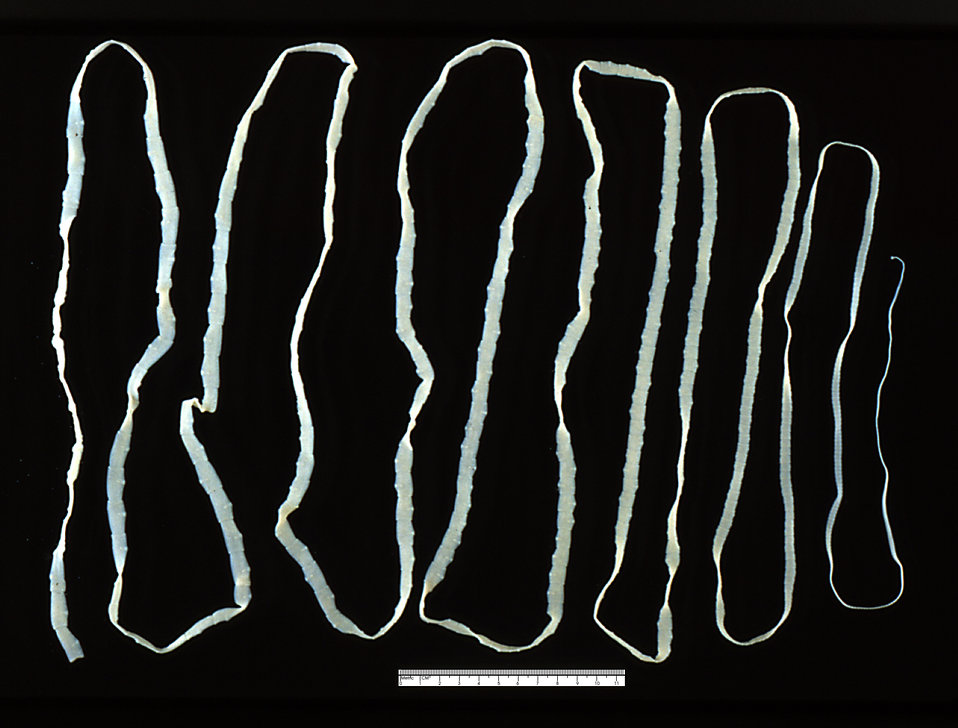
This is an adult Taenia saginata tapeworm.